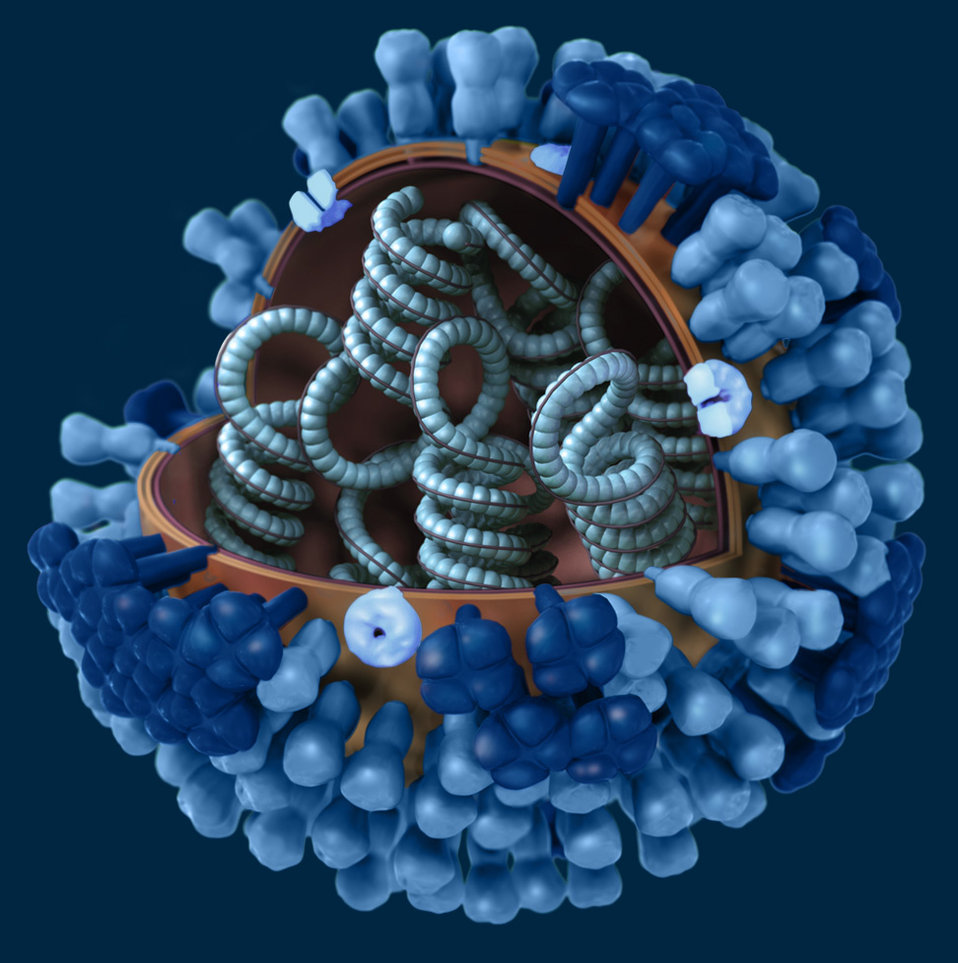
On a dark-blue background, this illustration provides a 3D graphical representation of a generic influenza virion's ultrastructure, and is not specific to a seasonal, avian or 2009 H1N1 virus. A portion of the virion's outer protein coat has been cut away, which reveals the virus' contents. See PHIL 11877 for an uncut view of the virion's exterior, and PHIL 11879, which includes a key to the virion's protein constituents.